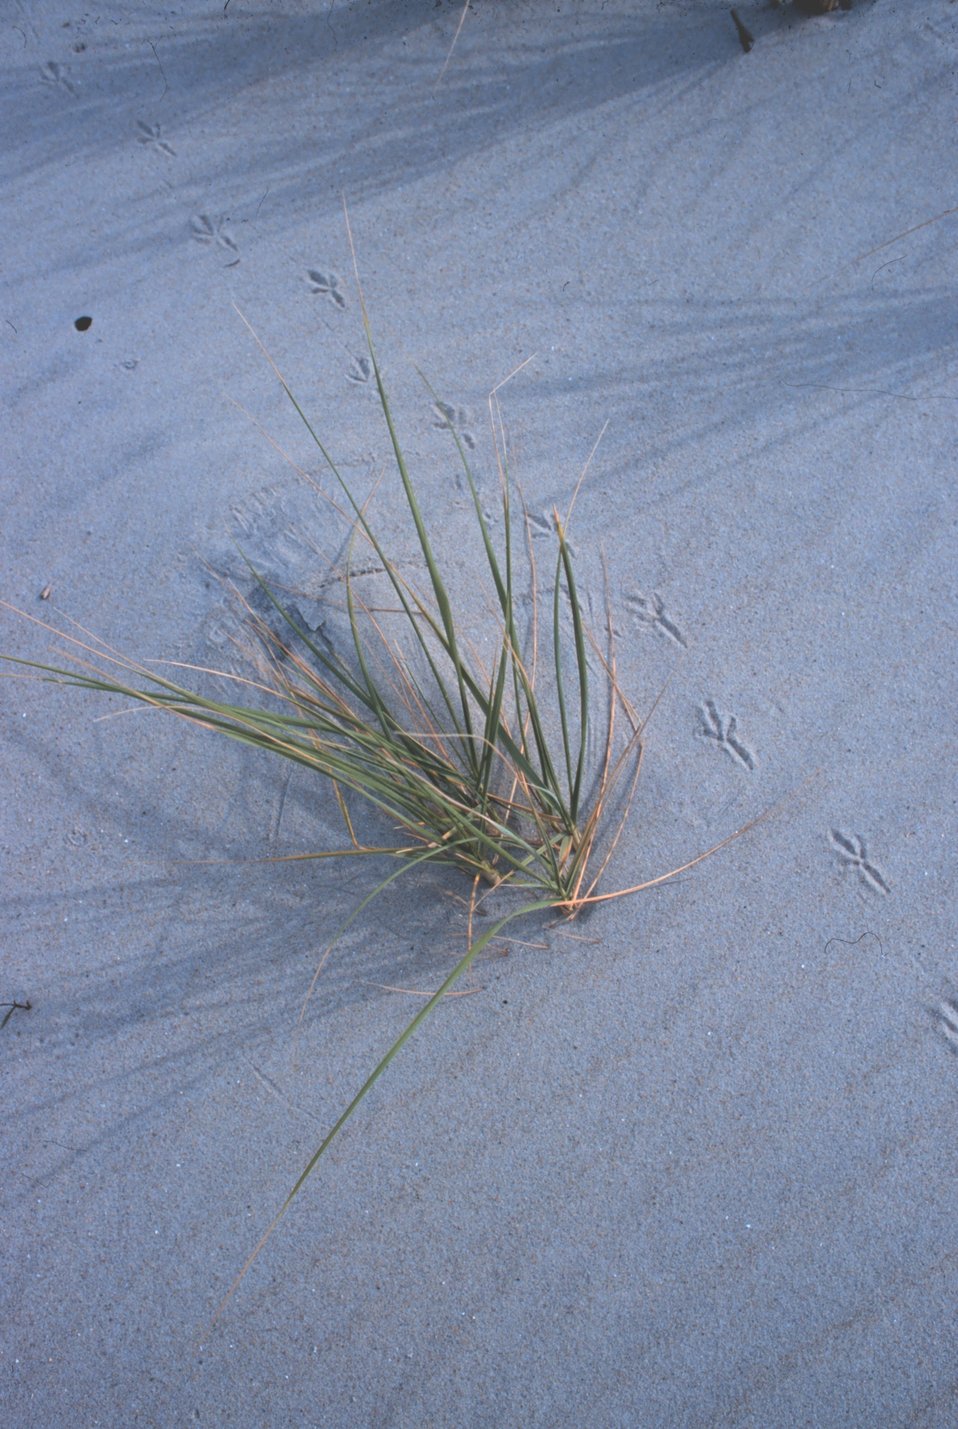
Wind-swept dunes near the abandoned Coast Guard Station